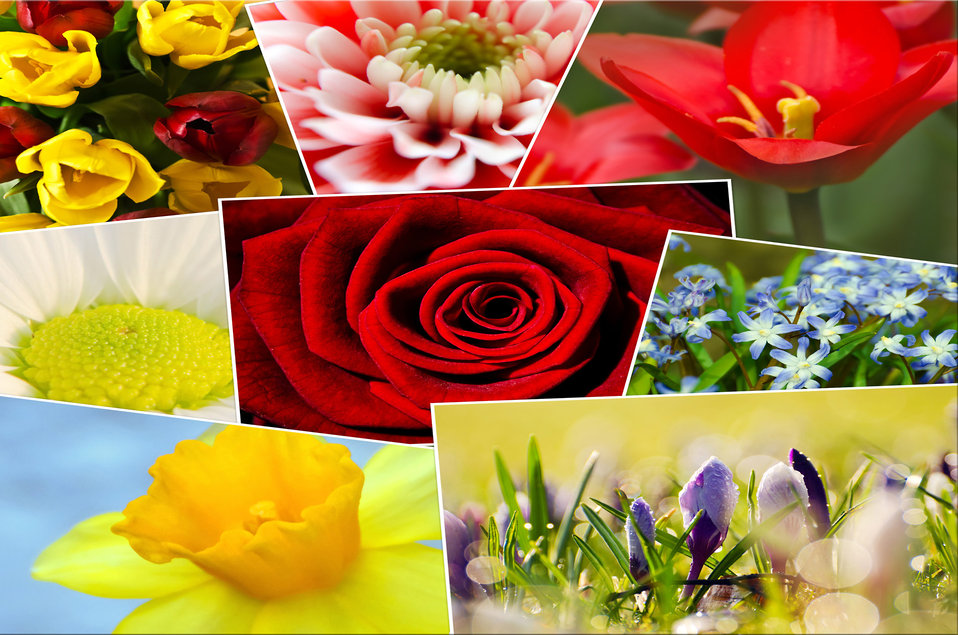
Flower collage - seasons.